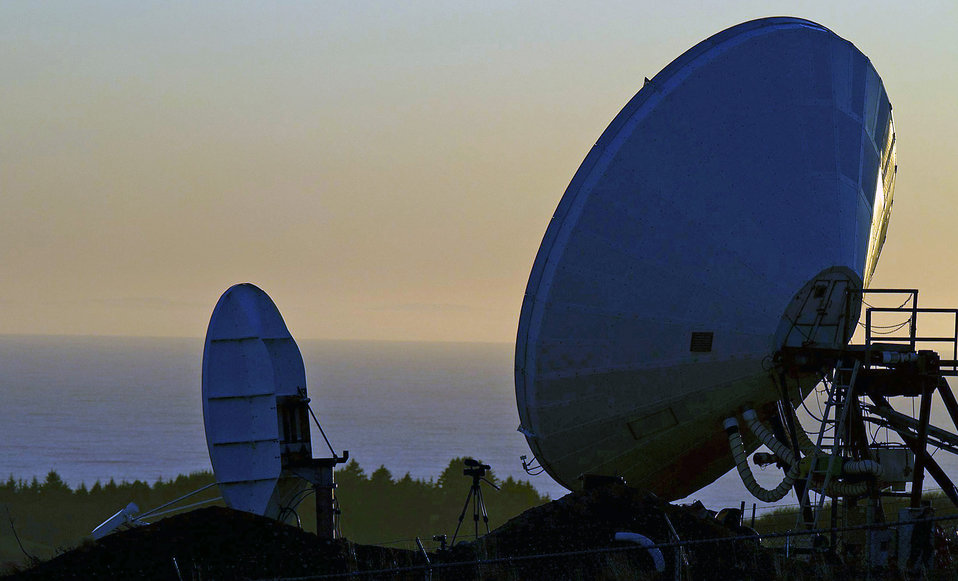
FalconSAT-5 rockets into orbit

A satellite dish at the Kodiak Launch Complex in Alaska reflects light from a sunset Nov. 19, 2010, prior to liftoff of a rocket carrying the Air Force Academy's FalconSAT-5 at the complex.